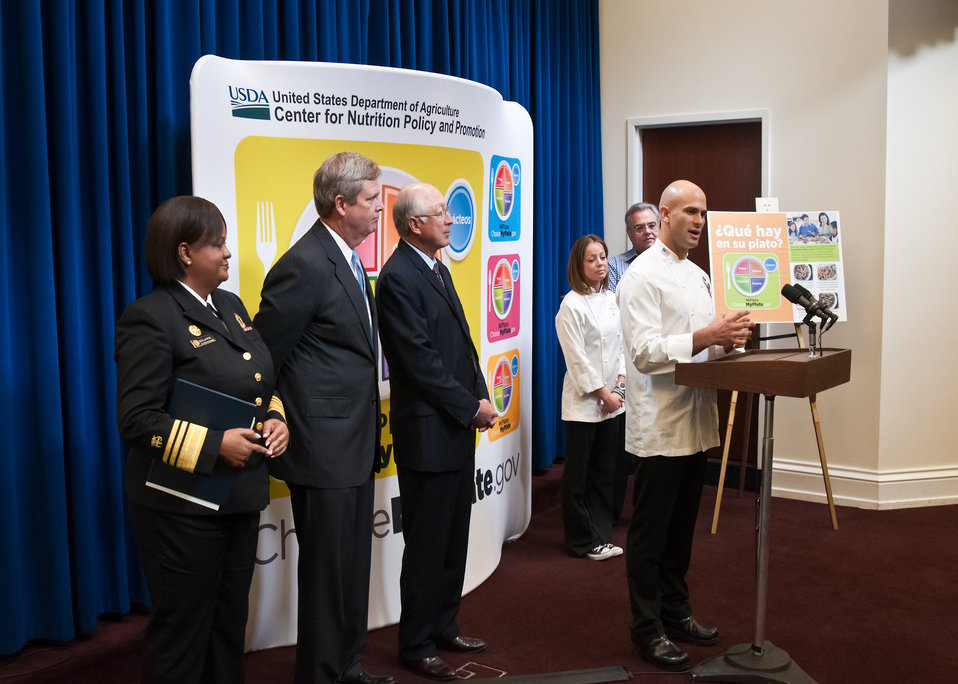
White House Chef Sam Kass answers questions posed by the press during the announcement of MiPlato the Hispanic version of MyPlate. Behind Chef Kass from left are Surgeon General Regina Benjamin, Agriculture Secretary Tom Vilsack, Interior Secretary Ken Salazar, Chef Marcella Valladolid and Chef Pepín. The group highlighted the federal government's new food icon, MiPlato that will help serve as a reminder to help Hispanic consumers make healthier food choices as Part of Hispanic Heritage Month Celebration. The event took place in the Eisenhower Executive Office Building in Washington, DC, Friday, September 30, 2011. Earlier this year, USDA unveiled MyPlate as a new generation icon with the intent to prompt consumers to think about building a healthy plate at meal times and to seek more information to help them do that by going to www.ChooseMyPlate.gov. The new MiPlato and MyPlate icons emphasize the fruit, vegetable, grains, protein and dairy food groups. The announcement is part of the Obama Administration’s celebration of Hispanic Heritage Month, which this year carries the theme “Renewing the American Dream,” and this week focuses on the community’s well being. The tips are part of a multi-year effort to raise awareness and educate consumers of every age on the importance of healthier eating and physical activity.